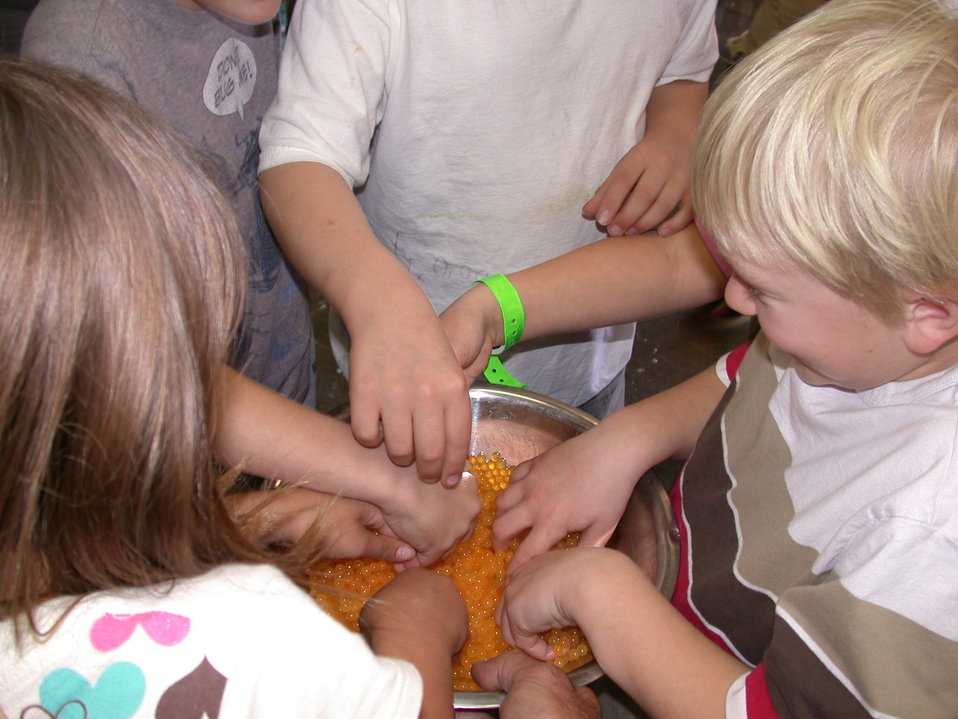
Getting the Feel of Salmon Eggs

Tours of the Garrison Dam National Fish Hatchery during the salmon spawn can be interactive. A pan of bulls-eyed eggs presents a memorable learning opportunity.

Location: Garrison Dam NFH

Photo Credit: Rob Holm / USFWS

Photo Contest Entry #120